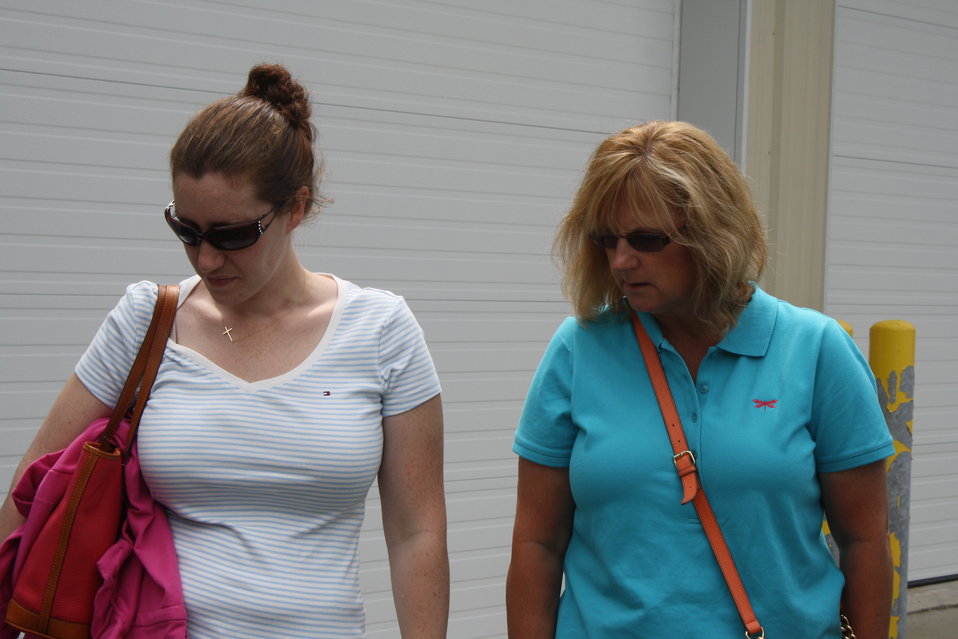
Nashua National Fish Hatchery welcomes regional office employees